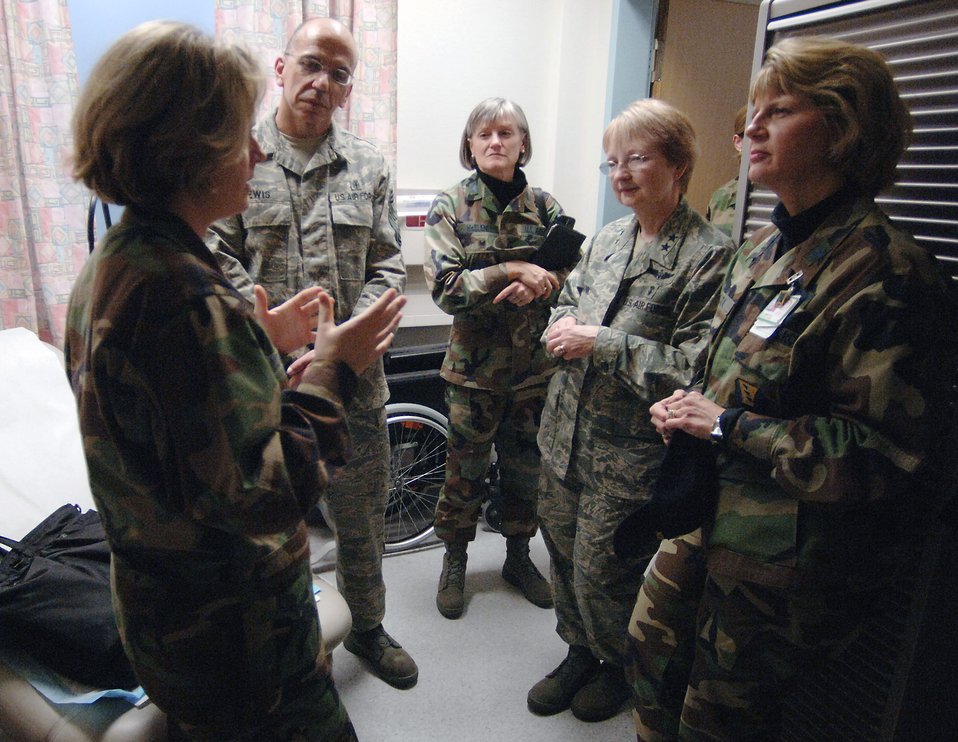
Assistant Air Force Surgeon General visits LRMC, Germany

While visiting staff and patients at Landstuhl Regional Medical Center, Germany, Dec. 12 Maj. Gen. Melissa A. Rank, Assistant Air Force Surgeon General, Medical Force Development and Nursing Services, discusses the comparative technical abilities of Air Force and Army medical technicians with family nurse practitioner Capt. Kathleen McKinney.